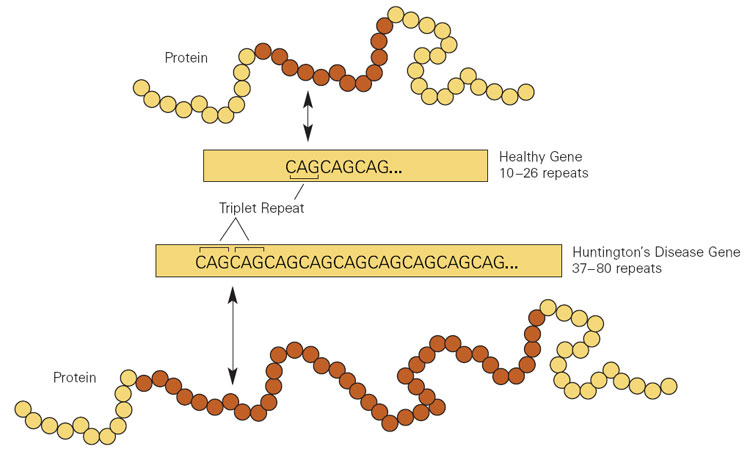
Huntington's disease

Graphic showing the excessive repetitions of the cytosine-adenine-guanine (CAG) nucleotide sequence in a gene from a Huntington's disease patient (bottom) compared to a gene from a person without the neurodegenerative disorder (top).